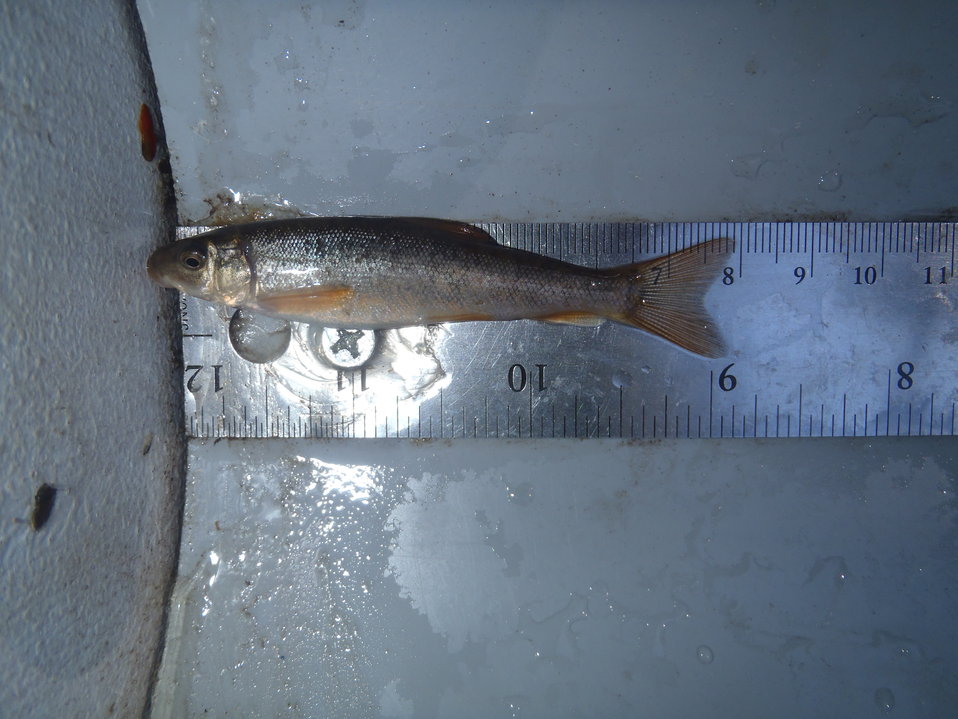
modoc sucker #1

Modoc sucker was listed as endangered in 1985.